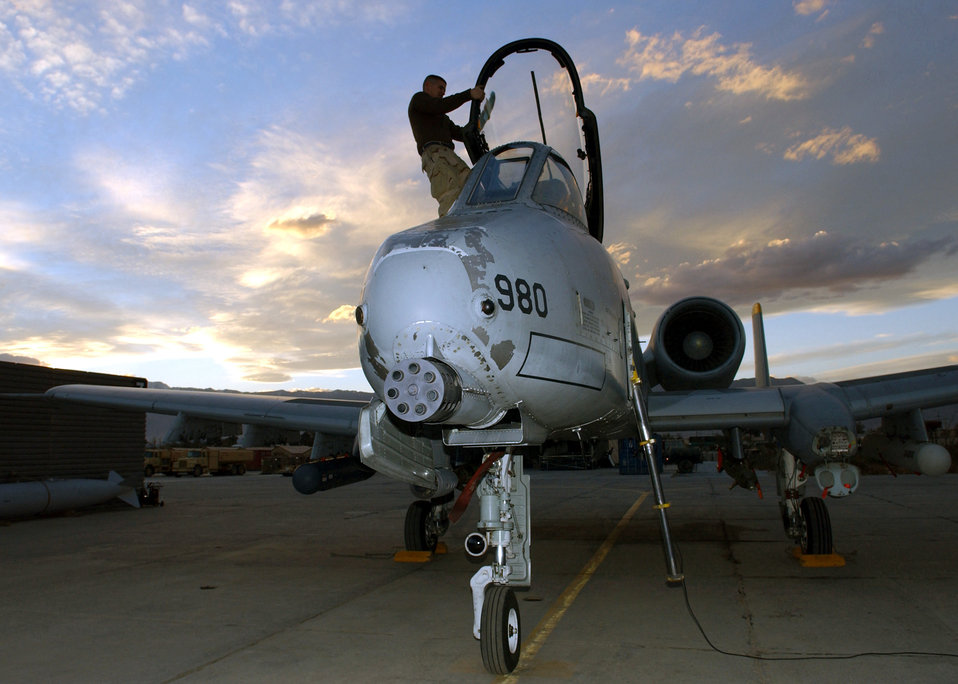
Wipeout

BAGRAM AIR BASE, Afghanistan -- Staff Sgt. Jonathan Van Etten wipes down an A-10 Thunderbolt II canopy here while preparing the aircraft for a flight Oct. 27. He is a crew chief assigned to the 455th Expeditionary Aircraft Maintenance Squadron. He and other squadron Airmen maintain A-10s supporting Operation Enduring Freedom. Sergeant Van Etten is deployed from Spangdahlem Air Base, Germany.